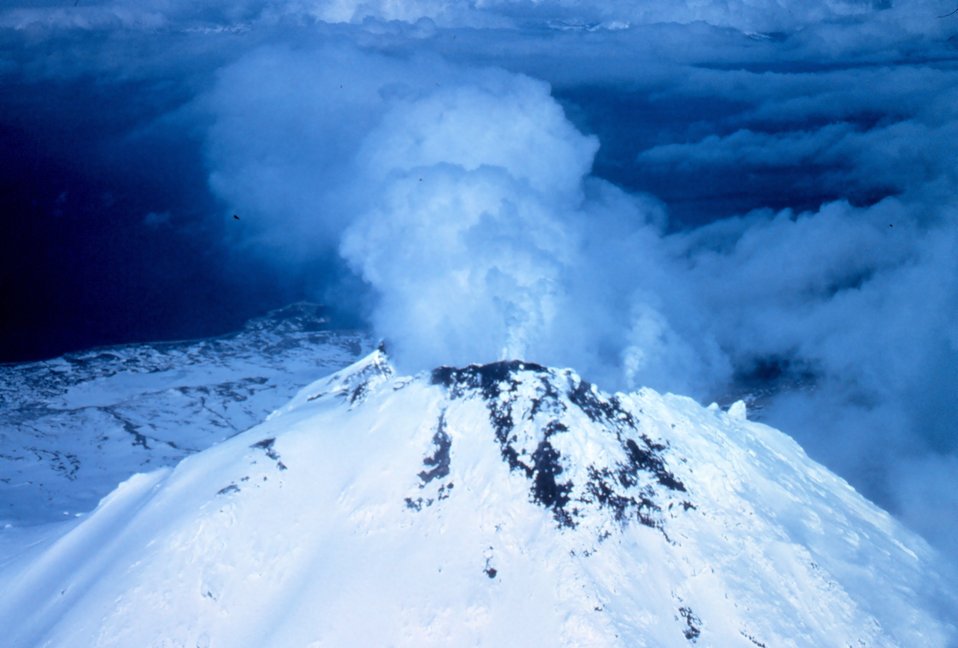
Augustine Volcano